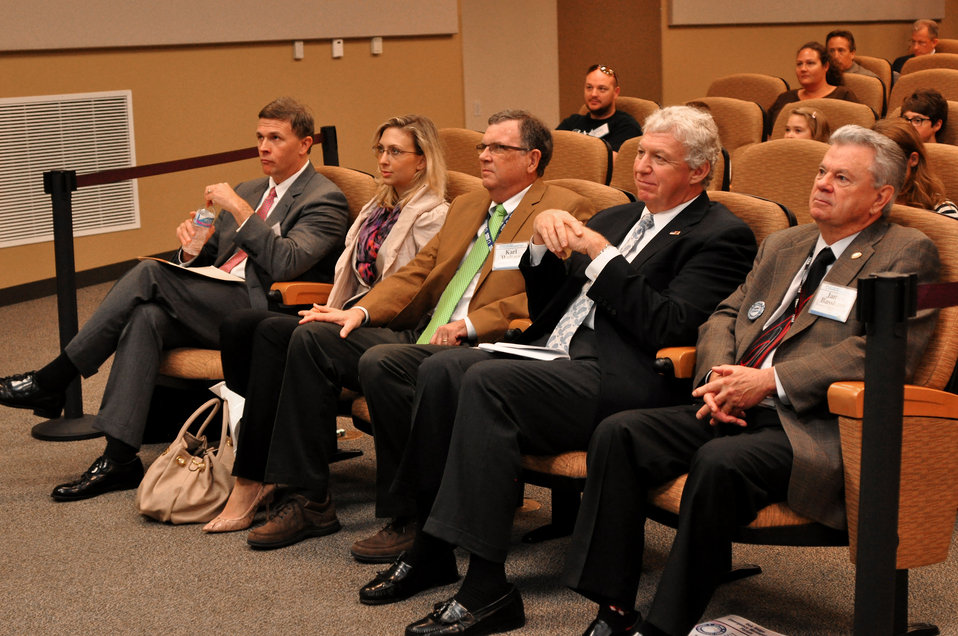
Don Thress Chief Counsel for DOE ORO , Desiree Matel-Anderson Chief Innovation Advisor, FEMA, Carl Waltzer Y-12,Richard Serino Deputy Administrator, FEMA Major General(RET) James Bassham, Dir. TEMA in Oak Ridge 2013

13-116-416 DOE photo Lynn Freeny 9-26-2013 Oak Ridge Tennessee